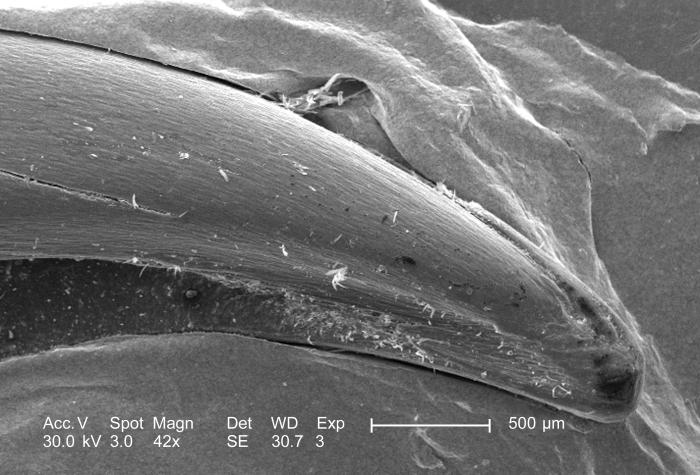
Using a low magnification, this 2005 scanning electron micrograph (SEM) depicts the morphological characteristics seen at the distal end of a domesticated cat's, Felis domesticus, claw; Magnified 42x. The cat's needle-sharp claws are highly specialized structures specifically designed for grasping prey, and assisting in exercises that demand a great degree of traction such as climbing trees, running, and even grooming. Its claws are retractable, which allows the animal to pull the structures back into the skin of its paws, thereby, reducing the degree of daily wear and tear. This claw nail was found in the home of a cat owner after having been sloughed off of the paw of a house cat in the course of his everyday activities.